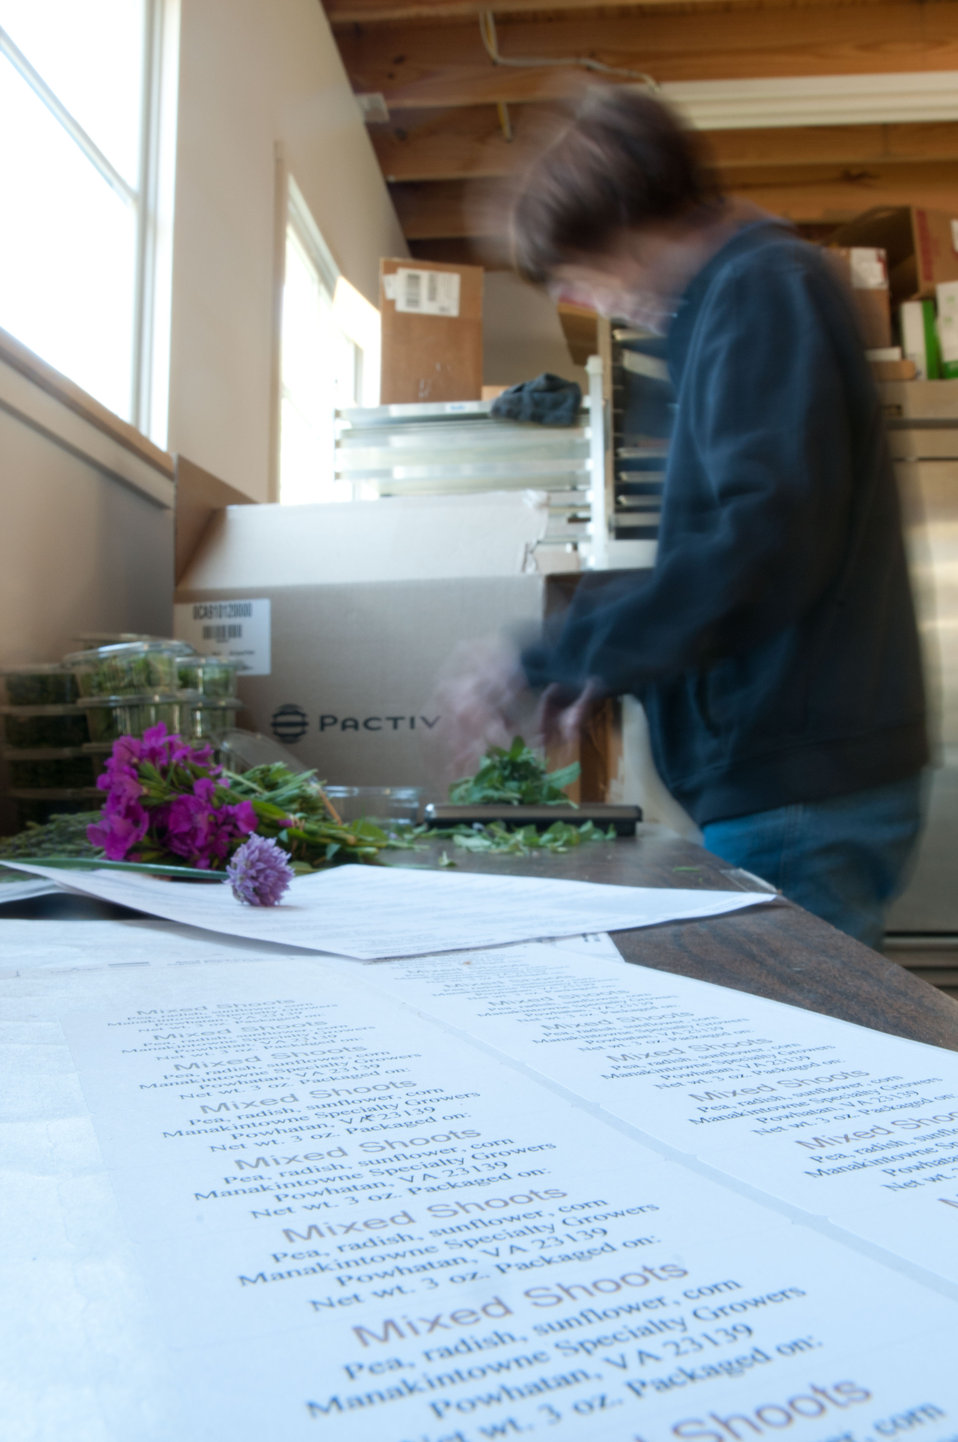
Claiborne Hammond packages fresh-cut herbs and ediable flowers at Manakintowne Specialty Growers, a 21-acre farm in Powhatan County, Virginia, on Friday, May 6, 2011. The farm specialty produce for chefs and markets of Richmond, Charlottesville and Williamsburg, VA area. This includes the online food hub of Lulus Local Food served by the Fall Line Farms cooperative. This is one of the farms that produces unique greens such as French Sorrel, Pea Shoots, Frisee, Tat soi, Mizuna, Pink/green radish shoots, Sunflower shoots, Baby red mustard, Tuscan Kale, Beet greens. All harvested by hand, micro greens such as Pak choi, Tat soi, Mizuna, Purple kohlrabi, Shungiku (edible chrysanthemum), Ruby chard, Purple/Daikon/Triton radish, Red amaranth and Bull's Blood Beet as well as edible flowers such as African Blue Basil, Nasturtiums, Johnny Jump Ups, and Chive blossoms Dianthus (pinks).. The seasonal choices are listed by suppliers and ordered by members on Lulus Local Food website, the food is distributed to pick-up points in the Richmond area. Together, they offer a wide variety of household food staples and specialty fruits, vegetables, meats, soaps, eggs, cheeses, flowers, honey, pastas, sauces, syrups, baked goods, mushrooms, flour and grains from and for the Richmond area.